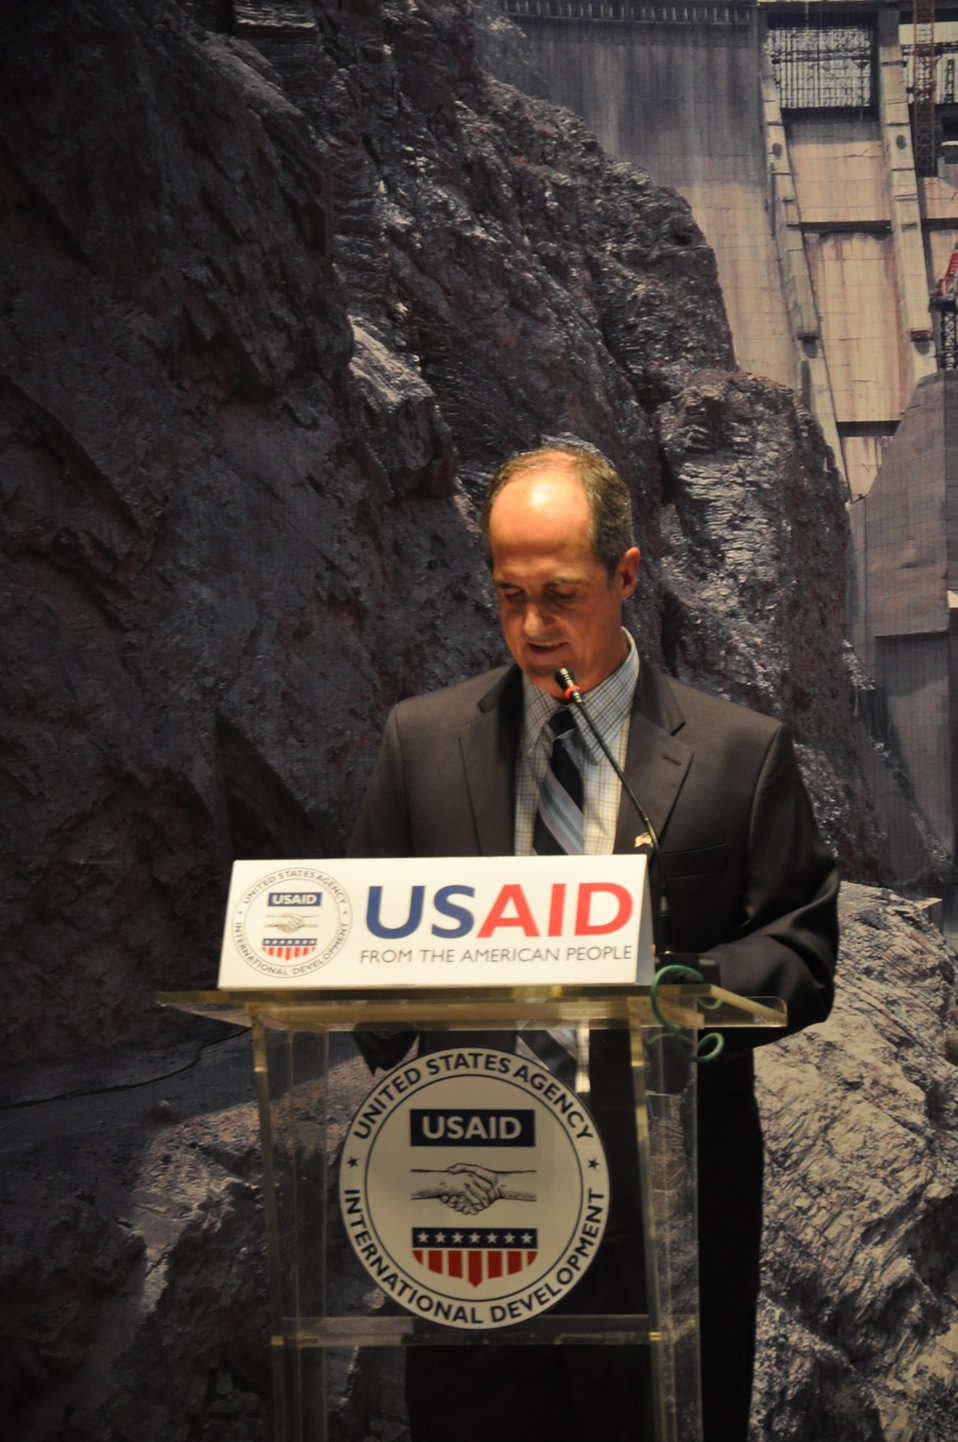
USAID Provinicial Mission Director Punjab talking at the Retrospective Exhibition